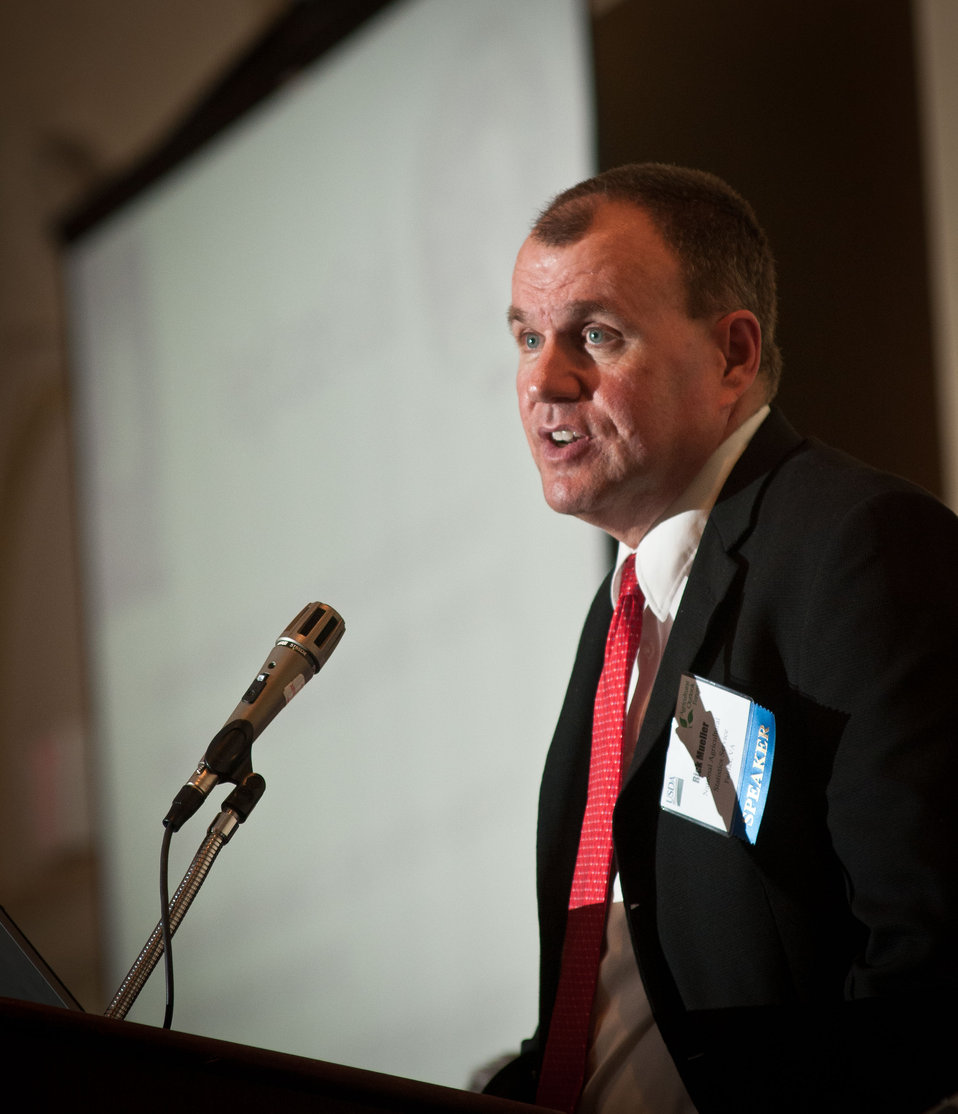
The U.S. Department of Agriculture (USDA) National Agricultural Statistics Service (NASS), Spatial Analysis Research Section Head Rick Mueller, presented VegScape: A NASS Web Service-based U.S. Crop Condition Monitoring System, during the 2013 Agricultural Outlook Forum was held at the Crystal Gateway Marriott Hotel in Arlington, VA on Friday, Feb. 22, 2013. The system is a new vegetation condition portal called VegScape, which delivers Web-service based interactive vegetation indices that enable quantification of U.S. crop conditions for exploring, visualizing, querying, and disseminating via interactive maps. Vegetation indices like NDVI (Normalized Difference Vegetation Index), and mean, median, and ratio comparisons to prior years are constructed for analytical purposes and on-demand crop statistics. The breakout session generally focused on the Weather Outlook for 2013. The presentation is available at www.usda.gov/oce/forum/presentations/Mueller.pptx.